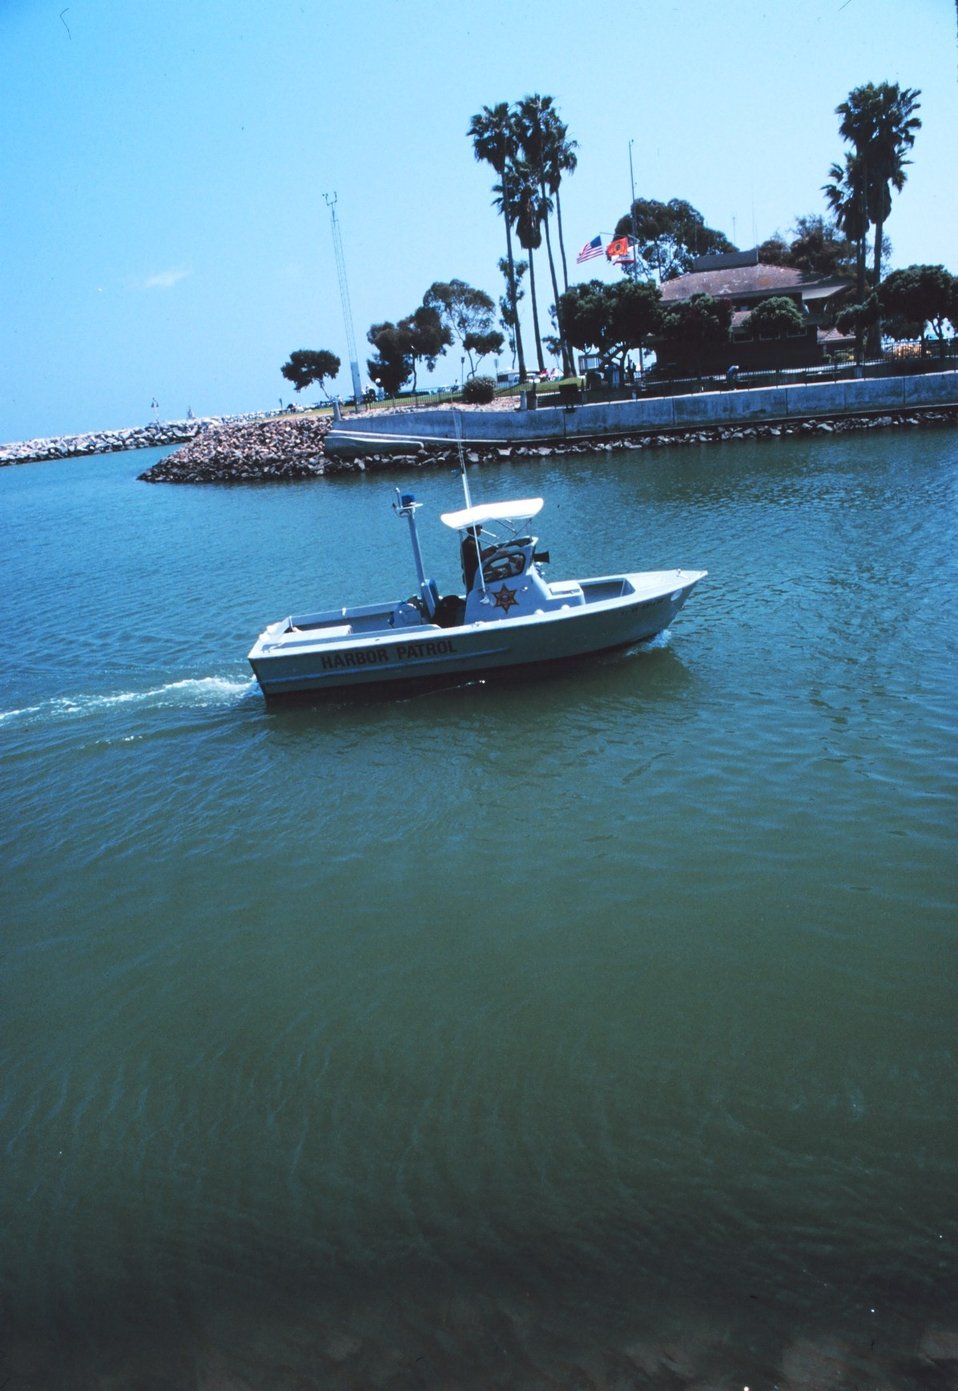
A harbor patrol boat at Dana Point